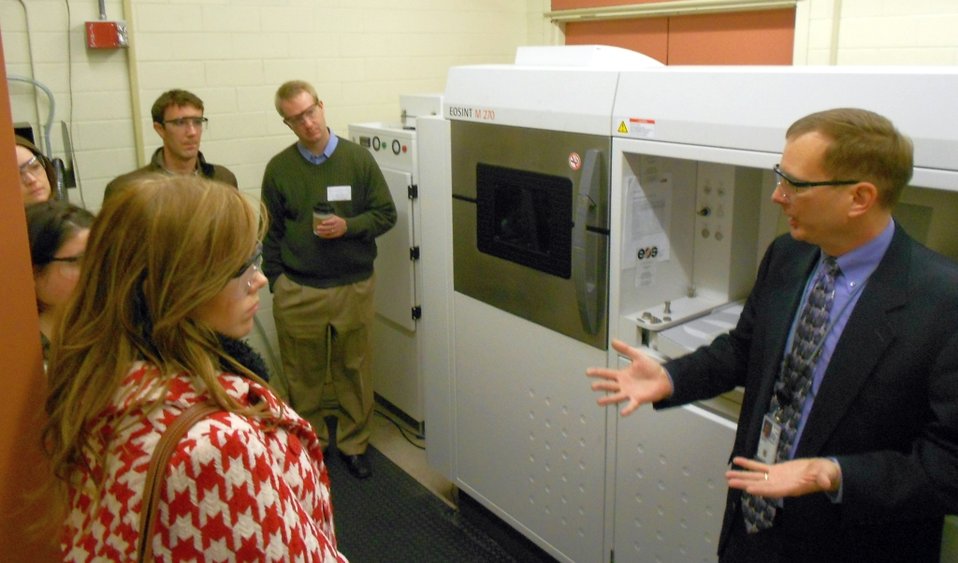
Machine Lab Tour #3

Kevin Jurrens (far right) of the Intelligent Systems Division in the NIST Engineering Laboratory briefs Congressional Staff from the House of Representatives Committee on Science, Space, and Technology on research efforts to create the necessary standards, test methods, and fundamental measurement science to overcome barriers for metal-based additive manufacturing.